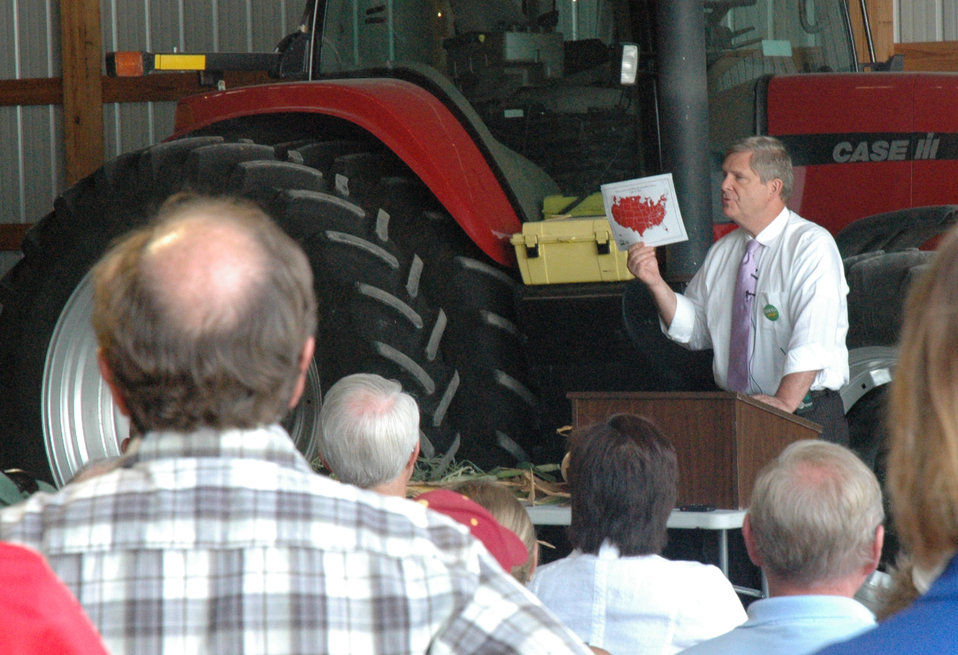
Agriculture Secretary Tom Vilsack met with producers, industry and business leaders in Prairie City, Iowa on Tuesday, July 24, 2012 to discuss the ongoing drought and USDA's efforts to assist producers.

As of July 20, the U.S. Department of Agriculture has designated 1,055 counties across the country as disaster areas due to drought. According to the most recent U.S. Drought Monitor report, 88 percent of our nation's corn and 87 percent of our soybeans are in drought-stricken areas.